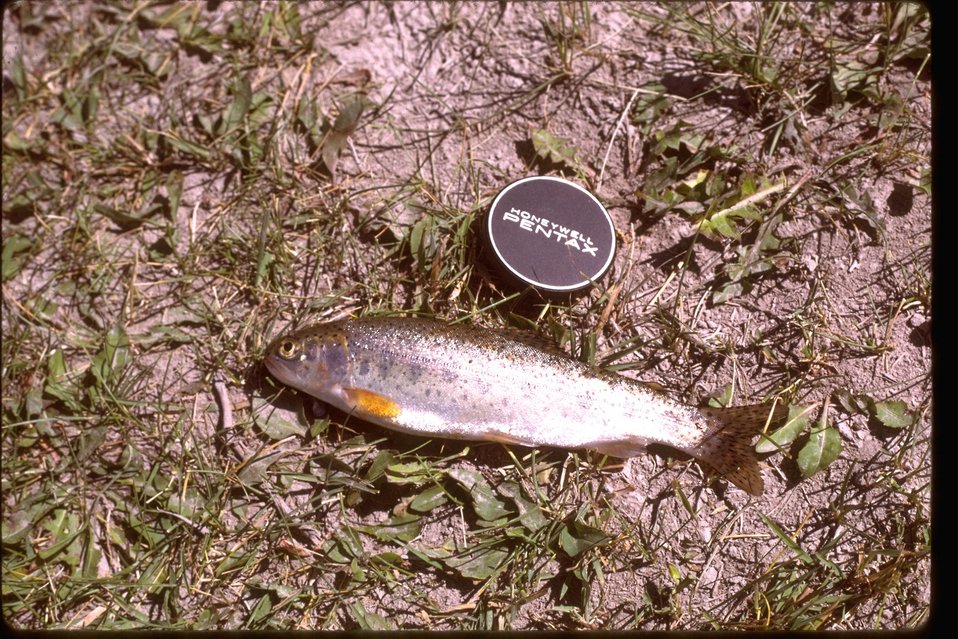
A small trout laying on the ground next to a camera lens cap for scale.